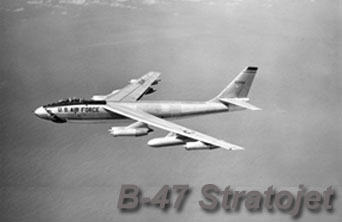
B-47 Stratojet

An overall view of a Boeing B-47 Stratojet aircraft in flight April 7, 1956. It was the world's first swept-wing bomber.